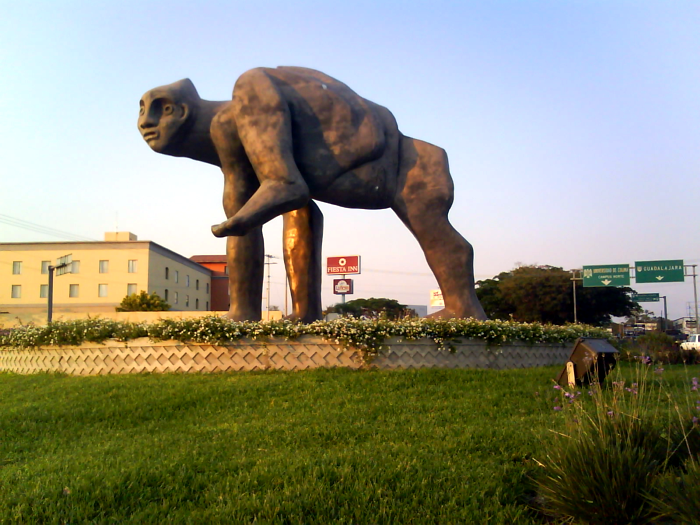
La Figura obscena en la Ciudad de Colima de José Cuevas